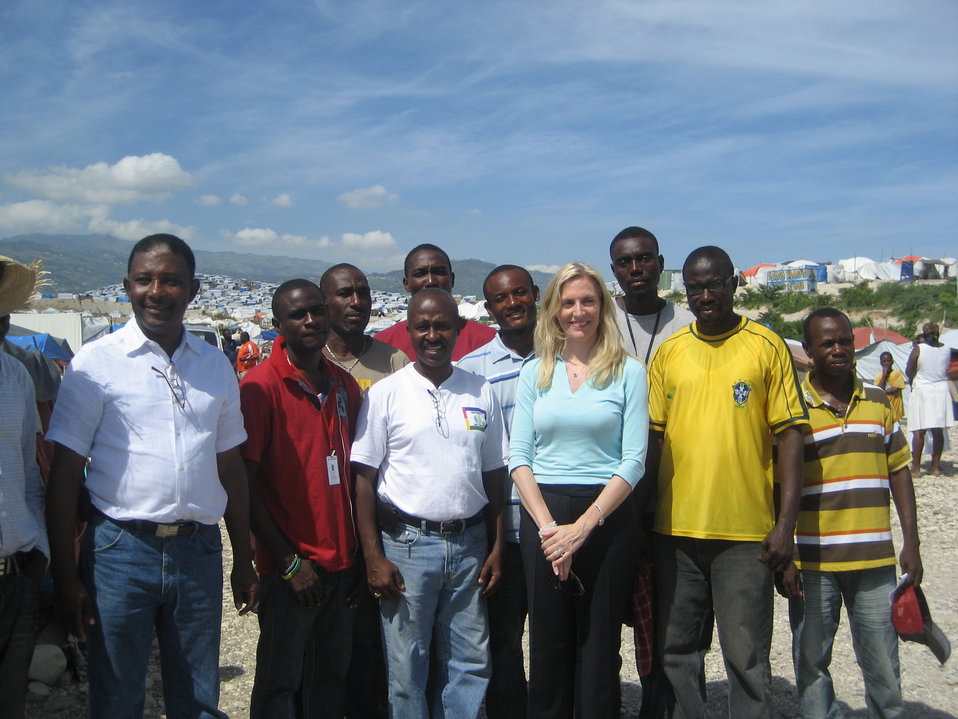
Under Secretary Lael Brainard visits Haiti, 7/29/2010

Under Secretary Lael Brainard with the management team at the tent camp she toured which is powered with solar lanterns provided by the World Bank. While power is progressively being re-established in several parts of the capital, many areas are expected to remain without power for a long period. Consequently, there is a strong need for individual, portable, self-sustained lighting solutions to provide the basic lighting needs required for family life, personal security and caring for the injured.